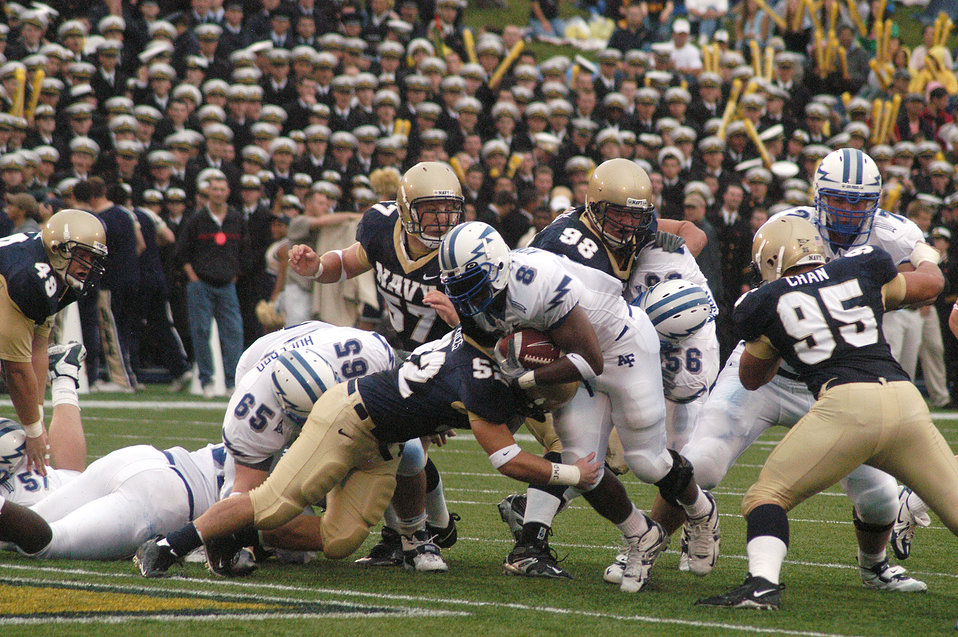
Midshipmen cage Falcons, 27-24

ANNAPOLIS, Md. -- Falcon fullback Jacobe Kendrick pushes his way forward for extra yardage after being wrapped up by Navy linebacker Jake Biles. Navy defeated Air Force 27-24.